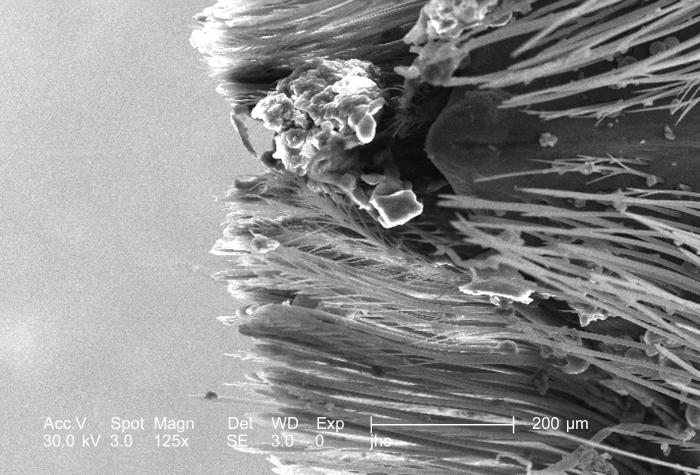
Under the moderate magnification of 125x, this scanning electron micrograph (SEM) revealed some of the morphologic features encountered at the distal tip of a male carpenter bee's, Xylocopa virginica, abdomen. Note the absence of a stinger, for male carpenter bees have no stinger, and therefore, cannot sting, while females do have a stinger, and though they can sting, they very rarely do sting.